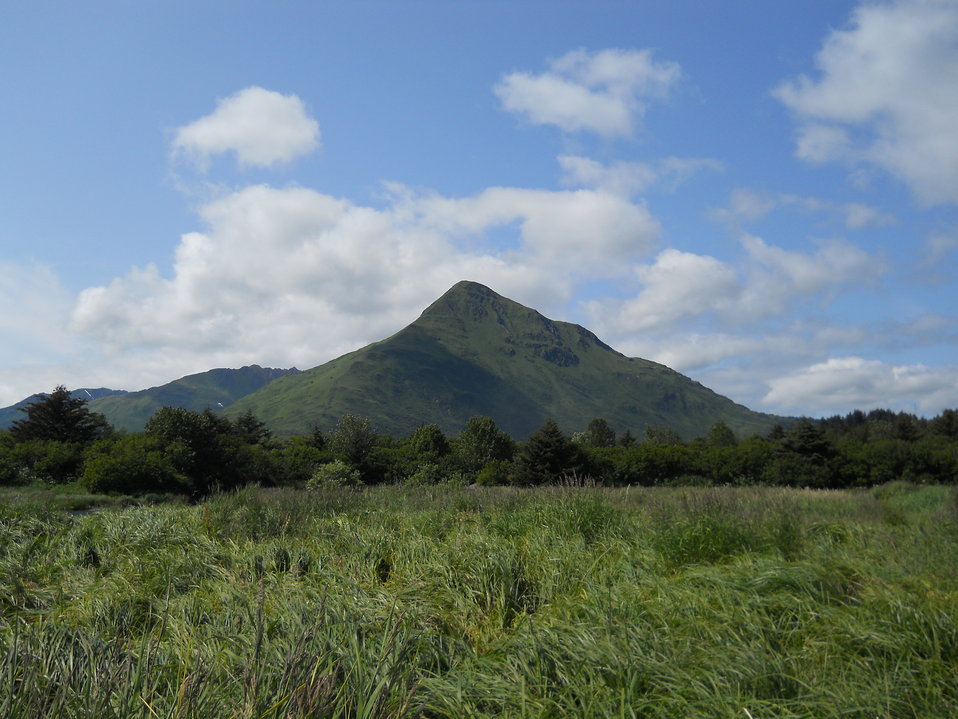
Barometer Mountain

Credit: USFWS
Photo taken by a Salmon Camp participant during a nature photography activity.

Source and Contact: Kodiak National Wildlife Refuge